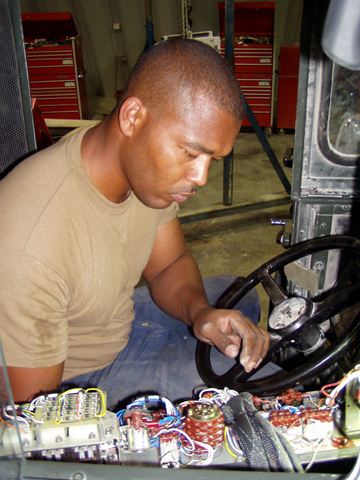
Keeping engines running

AL UDEID AIR BASE, Qatar -- Staff Sgt. Tyronne Williams troubleshoots a cab-lift circuit on an aircraft loader here Sept. 30. The circuit enables the vehicle's front and back ends to lift together. Williams is a special-purpose mechanic with the 379th Expeditionary Logistics Readiness Squadron here. He is deployed from Shaw Air Force Base, S.C.